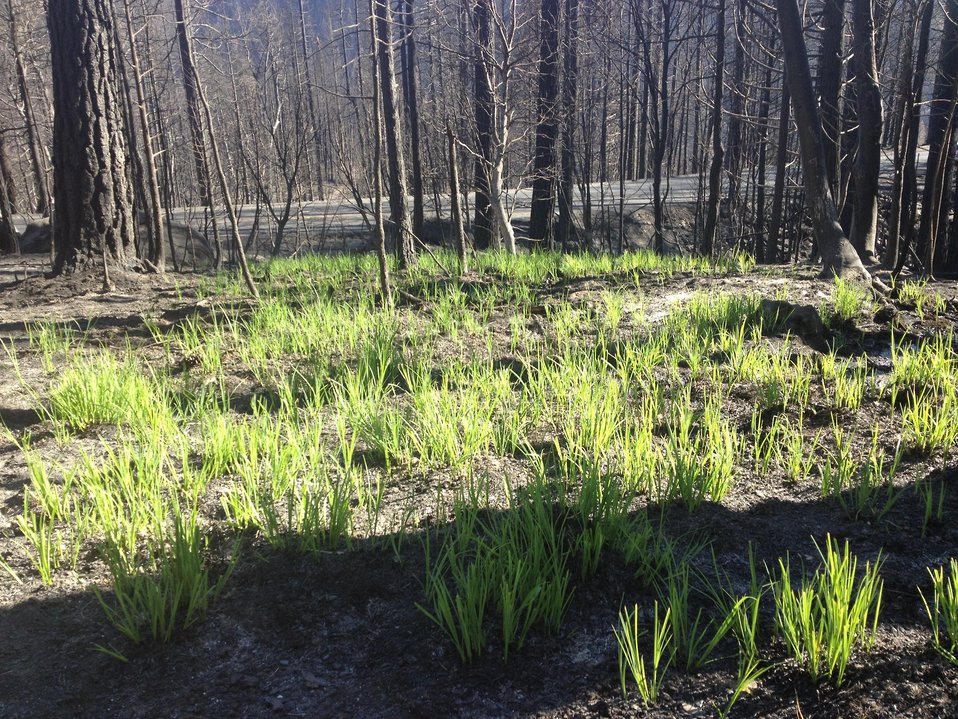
Grass sprouts in the black ash left from the Rim Fire. BAER is a rapid assessment of burned watersheds by a BAER team to identify imminent post-wildfire threats to human life and safety property and critical natural or cultural resources on National Forest System lands and take immediate actions to implement emergency stabilization measures before the first major storms. Fires result in loss of vegetation exposure of soil to erosion and increased water runoff that may lead to flooding increased sediment debris flows and damage to critical natural and cultural resources. BAER team members implement seeding and mulching installation to prevent erosion, erect temporary water run-off control structures that will protect recovering areas, and installation of warning signs, replace safety related facilities, remove safety hazards, prevent permanent loss of habitat for threatened and endangered species, and prevent the spread of noxious weeds and protect critical cultural resources. The Rim Fire in the Stanislaus National Forest near in California began on Aug. 17, 2013 and is under investigation. The fire has consumed approximately 256,169 acres and is 84% contained.